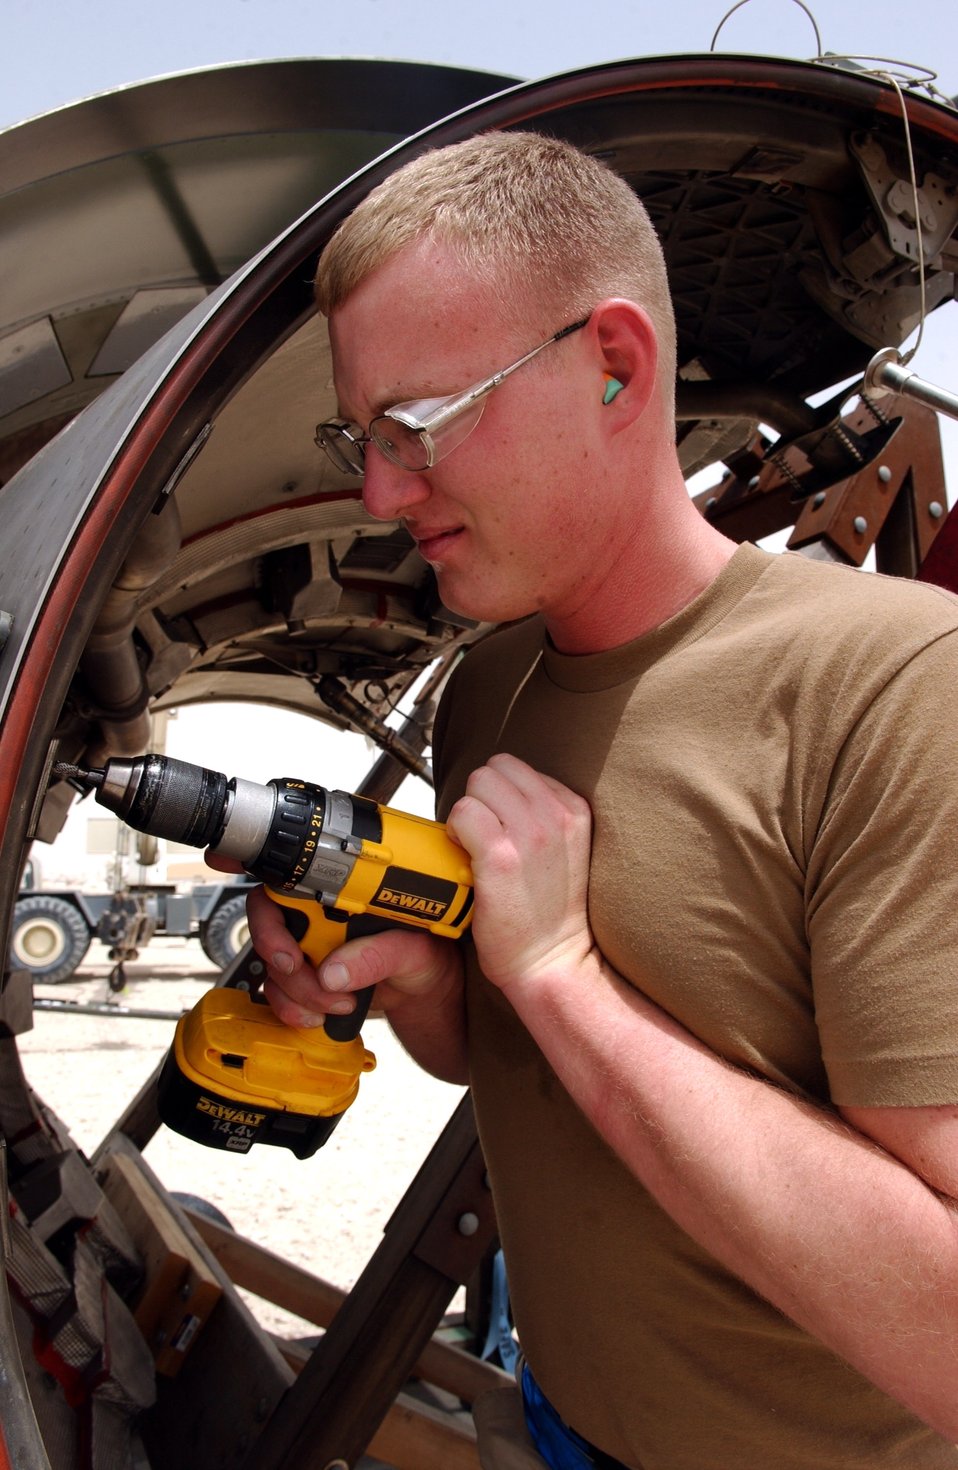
Strategic maintenance gives Airmen diverse experience

Senior Airman Benjamin Carter drills out a fastener on the thrust reverser door of a C-17 Globemaster III at a desert base on Tuesday, May 2, 2006. Airman Carter is a sheet metal technician deployed to the 379th Expeditionary Maintenance Squadron from Charleston Air Force Base, S.C.